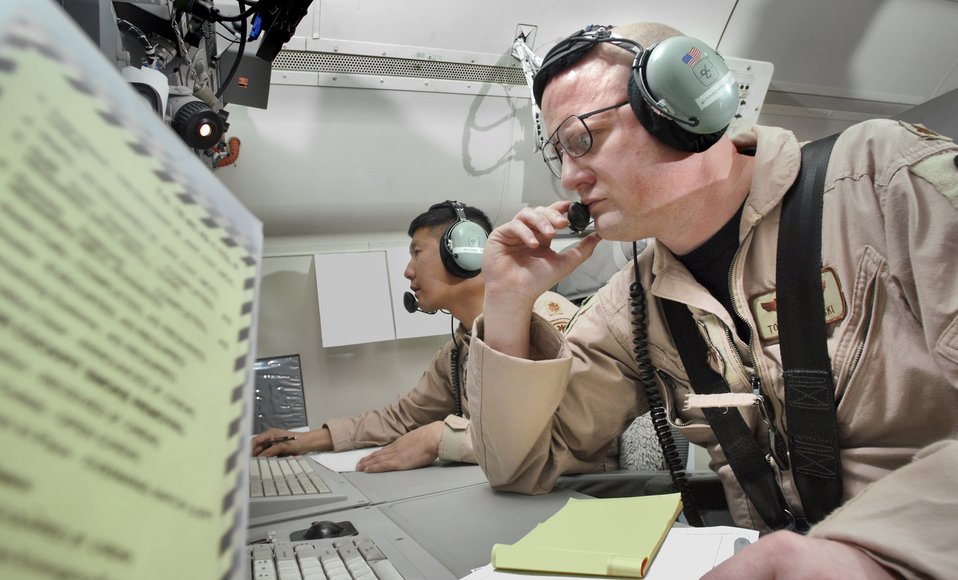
Joint STARS

SOUTHWEST ASIA (AFPN) -- Maj. Tom Grabowski is the senior director aboard an E-8C Joint Surveillance and Target Attack Radar System aircraft. Joint STARS provides command and control, intelligence, surveillance and reconnaissance. The senior director uses the skill and information of air weapons officers, air operations technicians, senior director technician, sensor management officer and others aboard the aircraft to direct air assets after coordination with command and control centers. Major Grabowski is deployed from Robins Air Force Base, Ga., to the 12th Expeditionary Airborne Command and Control Squadron.